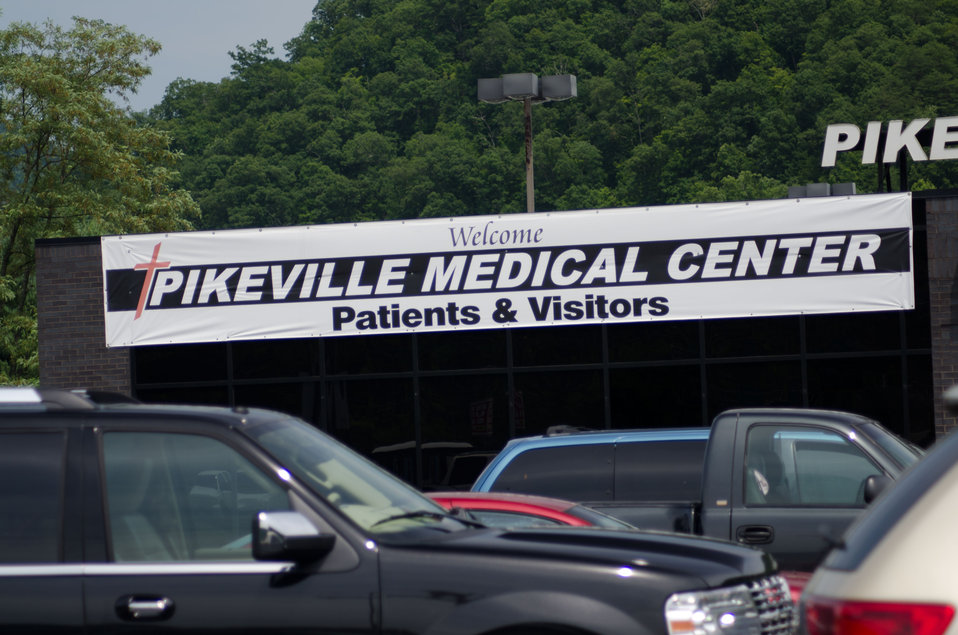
Re-utilized buildings at various ends of multiple parking lots are common sights at the Pikeville Medical Center on Tuesday, July 12, 2011, in Pikeville, KY. Nearby, the above ground construction phase of Pikeville Medical Center (PMC) expansion project, on Tuesday, July 12, 2011, in Pikeville, KY. After months of infrastructure construction and rain delays, one of Kentucky’s largest American Recovery and Reinvestment Act (ARRA) projects is under way. The $44.6 million Community Facilities Loan will finance construction of a new medical office building and parking garage. The new medical office building will house outpatient surgery, endoscopy, surgical support and provide exam, waiting and office space for 23 primary and specialty care physicians. It also will contain a medical research center to support existing research – in conjunction with Pikeville College – on health disparities, genetic research related to the prevalence of cancer and other areas, including drug and treatment trials. The new parking garage with more than 1,000 spaces will be built adjacent to the new medical building, eliminating the need to shuttle patients back and forth from remote parking areas. The new garage will provide closer and easier proximity to medical and hospital services for all patients.
Wayne Rutherford, County Judge-Executive for Pike County, says funding from ARRA is a boon for his county because it will create jobs.

“This is great for Pike County’s economy. We know we have a great hospital, and with this support, it will be even better,” said Rutherford. “The unemployment rate here is above the state average and this will stimulate jobs. There will be construction, which means lots of jobs on the front end – and even more once it is built.”

Pike County is one of Kentucky’s persistent poverty counties and the current medical facility provides health care services for a rural population of more than 68,000. This project will create 1,430 direct and indirect construction jobs, in addition to 97 long-term jobs. It is scheduled to be completed in December 2012.

“This project is a prime example of the ARRA monies being utilized for much-needed health care facility expansion in an economically-depressed region of Eastern Kentucky and Appalachia,” said Tom Fern, State Director for Rural Development in Kentucky. “This hospital has received national recognition for its quality of care, and this money will allow them to expand and build upon their success and continue providing quality health care services to the region.”

PMC was named National Hospital of the Year by the American Alliance of Healthcare Providers in November 2009. The hospital was among 400 elite health care facilities to apply for this prestigious honor. To earn this recognition, PMC competed against more than 400 hospitals, including the Mayo Clinic, the John Hopkins Hospital, Cedar-Sinai Medical Center, the Cleveland Clinic, Duke University Medical Center and Vanderbilt University.

Pikeville City Manager Donovan Blackburn said the medical center is the largest employer in Pikeville and contributes nearly $2 million to the city through the payment of occupational taxes. He went on to say that Pikeville Medical’s success is also the city’s success because as other cities struggle with dwindling revenues, Pikeville has actually seen growth.

“This is a regional medical center that is very important to the city. Pikeville is a legal, financial and education hub for Eastern Kentucky and a gateway to rural communities in Virginia and West Virginia. There are half a million within a 50-mile radius – so it’s not just local people that depend on this facility,” said Blackburn. “From a regional standpoint it adds volume from a jobs standpoint. Everybody in this county knows someone or has family that works for Pikeville Medical Center.
“People in this area used to have to go out of the area for good jobs and quality medical services, but Pikeville Medical has changed that,” added Blackburn. 'And it has impact on other parts of the city’s economy – hotels, restaurants and retail. It increases the quality of life tenfold.”

The Recovery Act was designed to spend money gradually over time in order to sustain a true recovery – with peak spending to occur early this year. While the experts agree that ARRA is already responsible for creating or saving approximately two million jobs, about 75 percent of recipients that reported on their Recover Act spending indicated their projects are less than half complete, meaning there is even more job impact from those dollars to come.